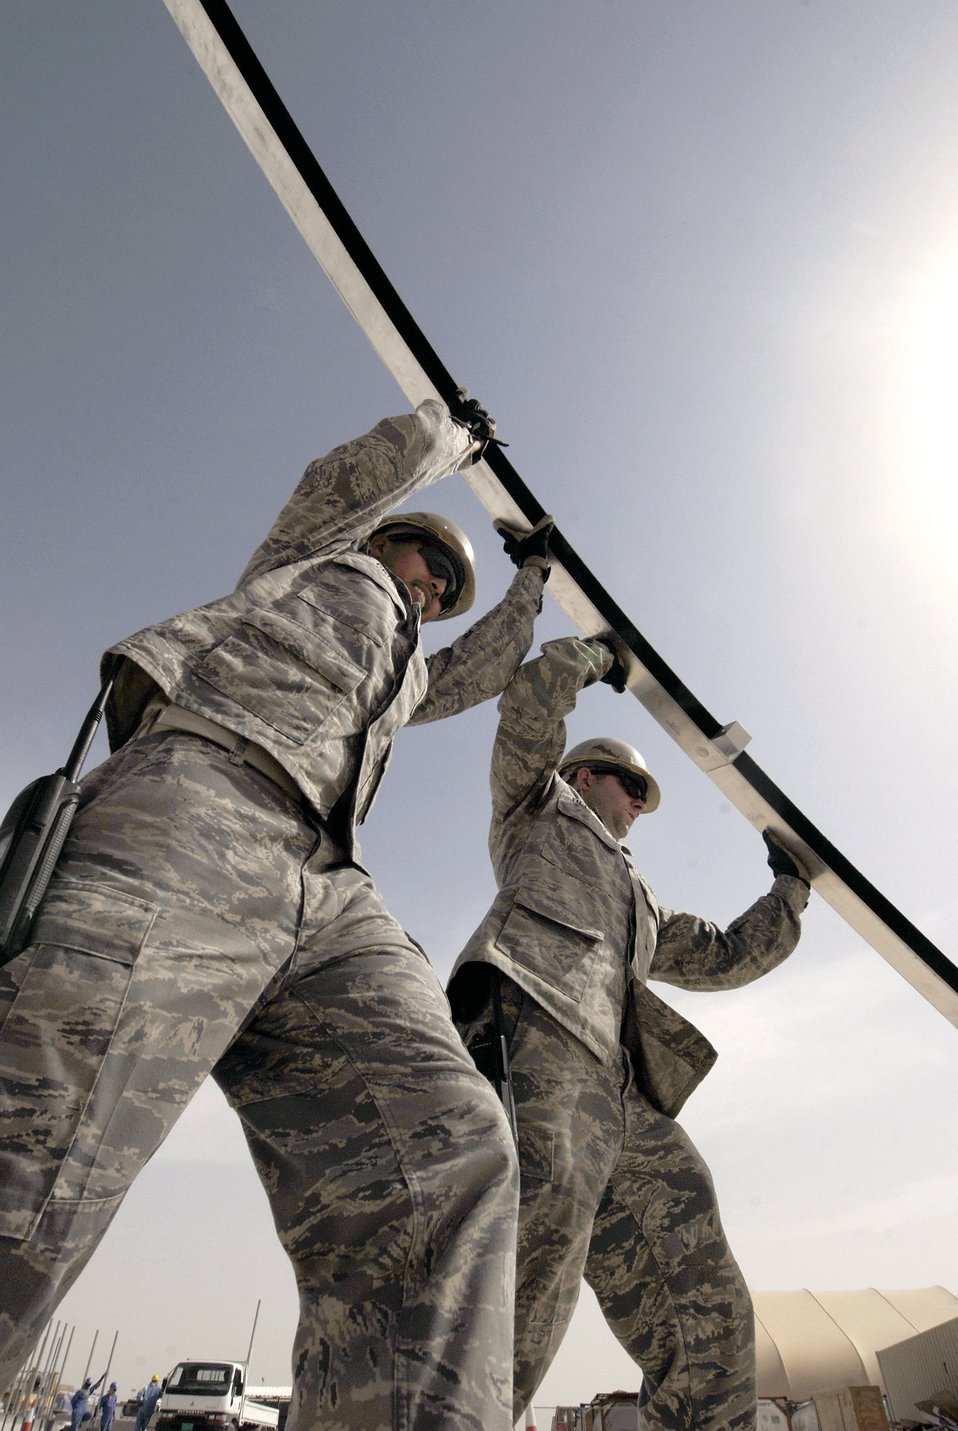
Raising the roof

Staff Sgts. Matthew Cruz and Evan Bellamy raise an arch component Feb. 17 to finish the skeleton of a California Medium Shelter System which will be used to house Airmen at an air base in Southwest Asia. The NCOs are structural craftsmen with the 379th Expeditionary Civil Engineer Squadron. Sergeant Cruz, from Tacoma, Wash., is deployed from Pope Air Force Base, N.C. Sergeant Bellamy, from Sullivan County, N.Y., is deployed from Dover AFB, Del.